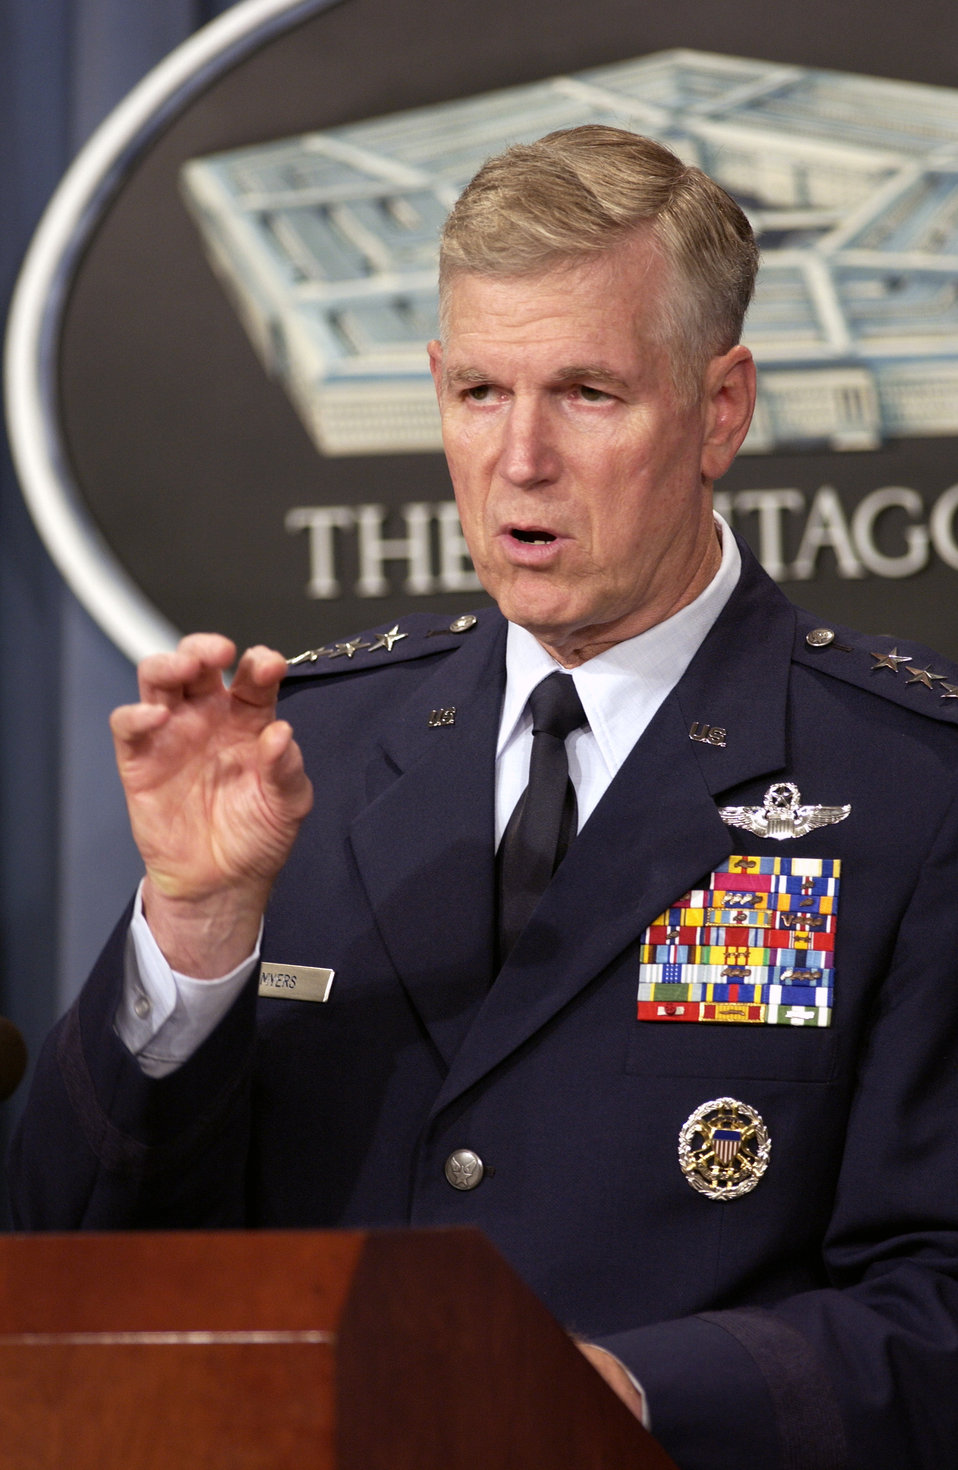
Gen. Myers

WASHINGTON -- Chairman of the Joint Chiefs of Staff Gen. Richard B. Myers responds to a reporter's question during a Pentagon press briefing on Aug. 5. Myers and Secretary of Defense Donald H. Rumsfeld gave reporters an operational update on Operation Iraqi Freedom.